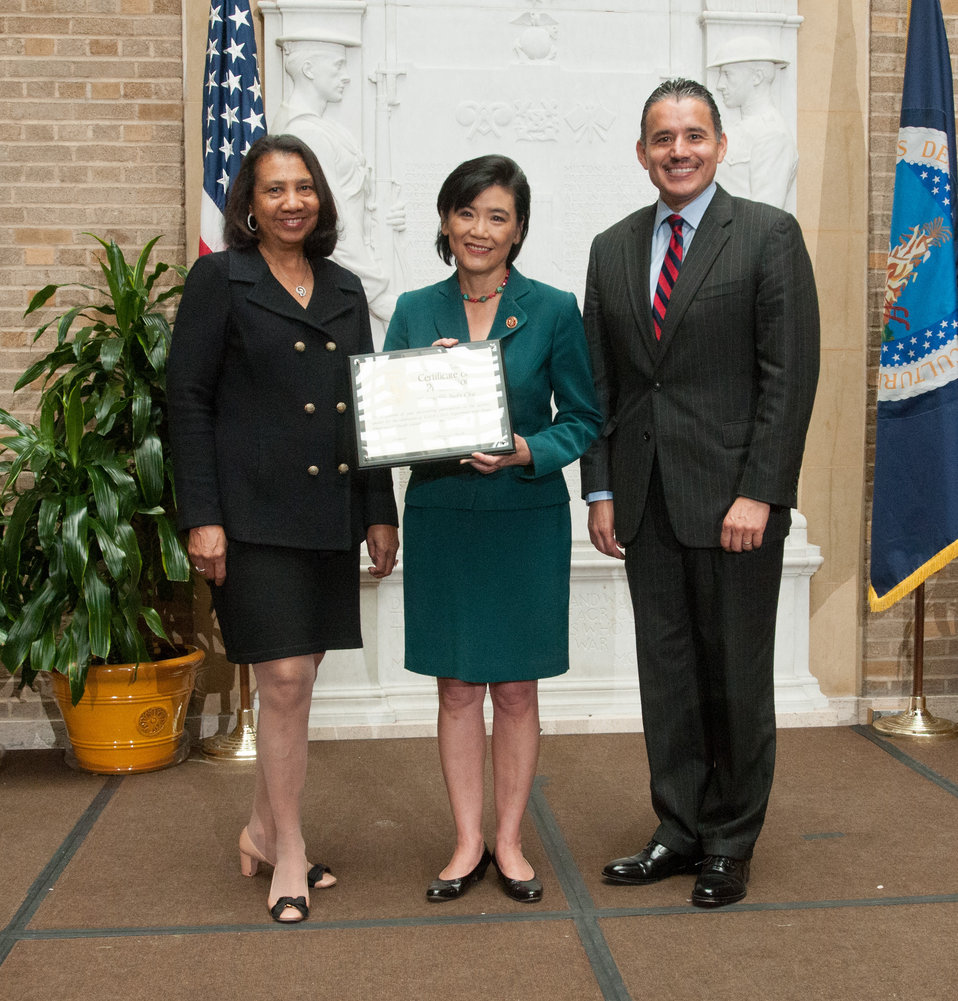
U.S. Department of Agriculture (USDA) Office of the Secretary Deputy Chief of Staff Oscar Gonzales, right, and Associate Assistant Secretary for Administration Alma Cobb Hobbs, Ph.D., left; present U.S. Representative Judy Chu (CA) a Certificate of Appreciation, during the USDA Asian Pacific American Heritage Month Observance, at the USDA headquarters in Washington, D.C., on Thursday, May 23, 2013. This year’s theme is “Building leadership; Embracing the Cultural Values and Inclusions.”